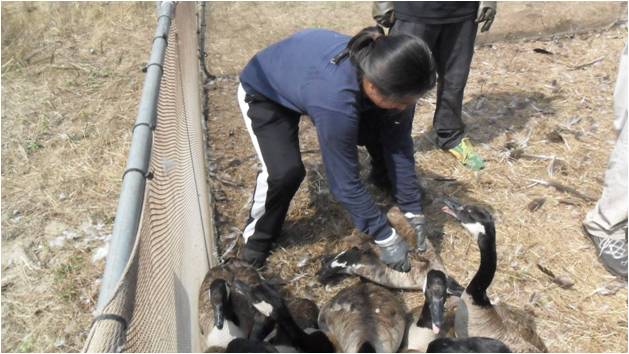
Canada geese

Handling canada geese at Cape May National Wildlife Refuge.